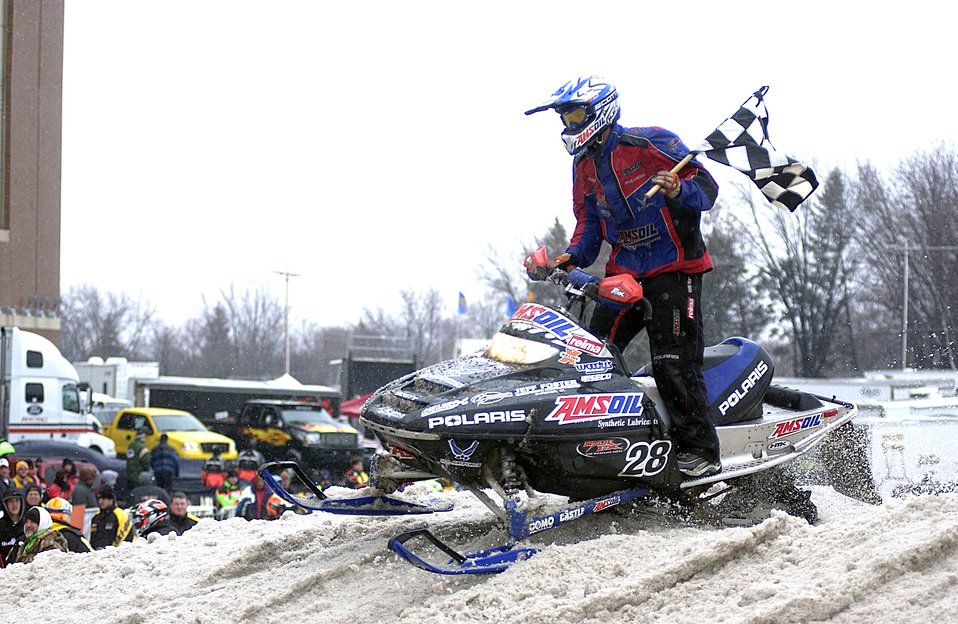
Winning 'sno' problem

GREEN BAY, Wis. -- Justin Tate holds the checkered flag following his March 7 win in the Snocross Pro Stock National race at Lambeau Field here. The Air Force is a secondary sponsor with the AMSOIL/Polaris Scheuring Speed Sports team. This is the third year the Air Force has been involved with the team.